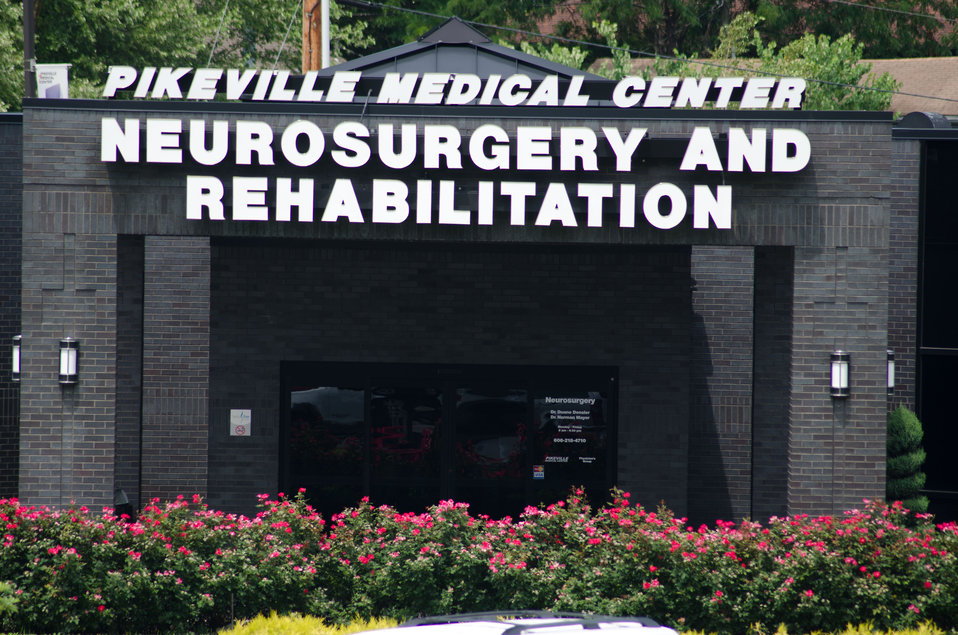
Detour, arrow, construction and temporary signs are posted on and across the re-utilized buildings and properties at various ends of multiple parking lots are common sights at the Pikeville Medical Center on Tuesday, July 12, 2011, in Pikeville, KY. Nearby, the above ground construction phase of Pikeville Medical Center (PMC) expansion project is underway, after months of infrastructure construction and rain delays. This is one of Kentucky’s largest American Recovery and Reinvestment Act (ARRA) projects. The $44.6 million Community Facilities Loan will finance construction of a new medical office building and parking garage.